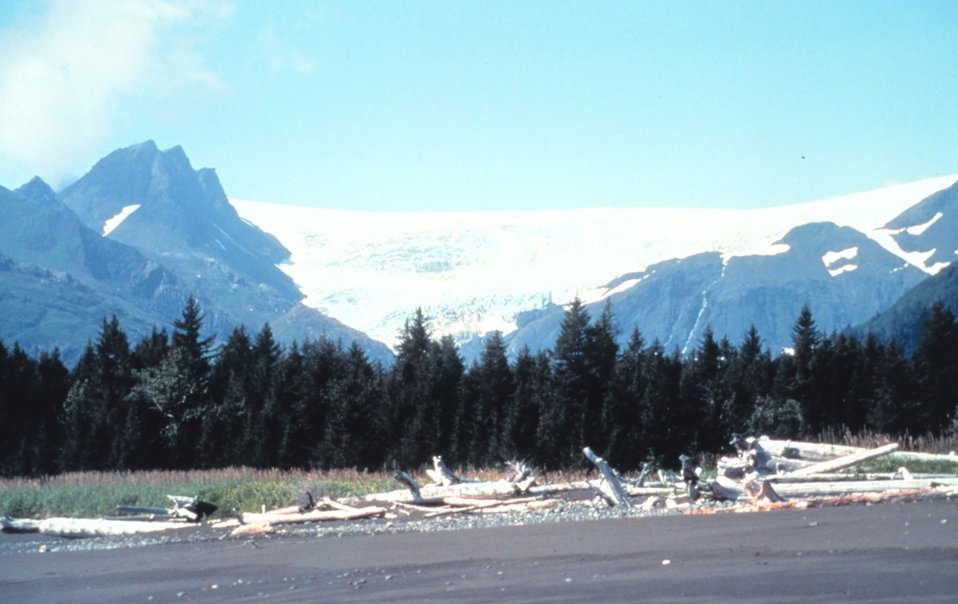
Driftwood, tree line, mountains and glacier